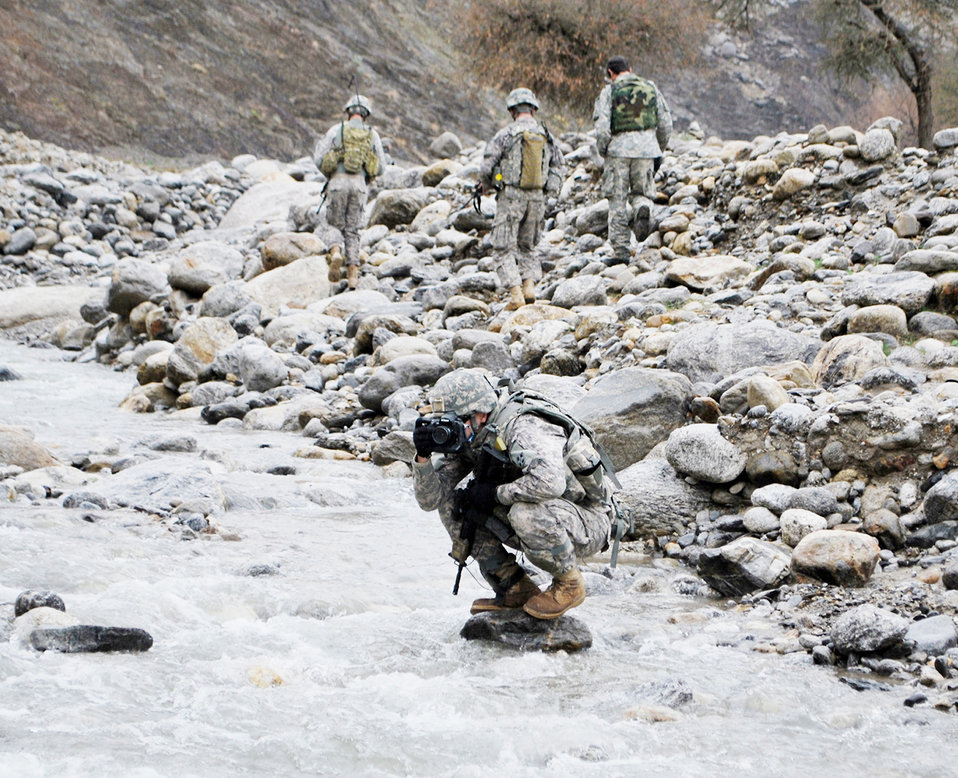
Balancing act

Staff Sgt. Steven Doty, a combat photographer for the Nuristan Provincial Reconstruction Team, snaps a photo of the rest of the team crossing a river near Sundurwa village, Afghanistan, March 3, 2010. The Nuristan PRT went to Sundurwa village to conduct an engineer assessment on a retaining wall to protect the village against future flash floods.